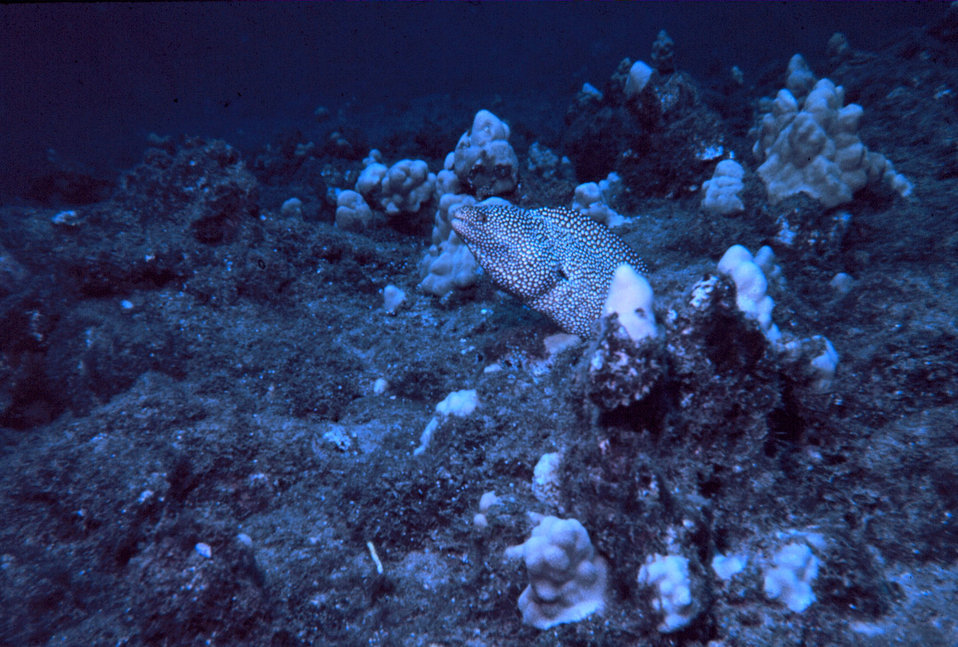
Gymnothorax Meleagris - Moray eel. Porites sp. corals are white outcroppings